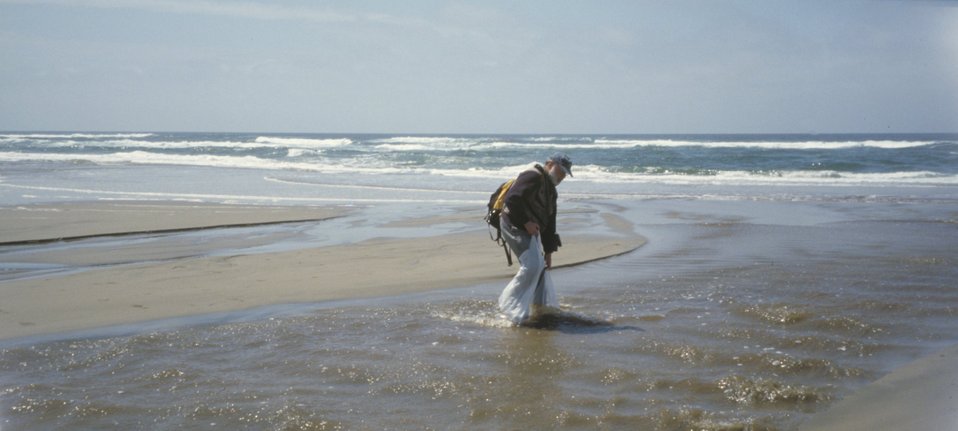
Point Reyes Great Beach